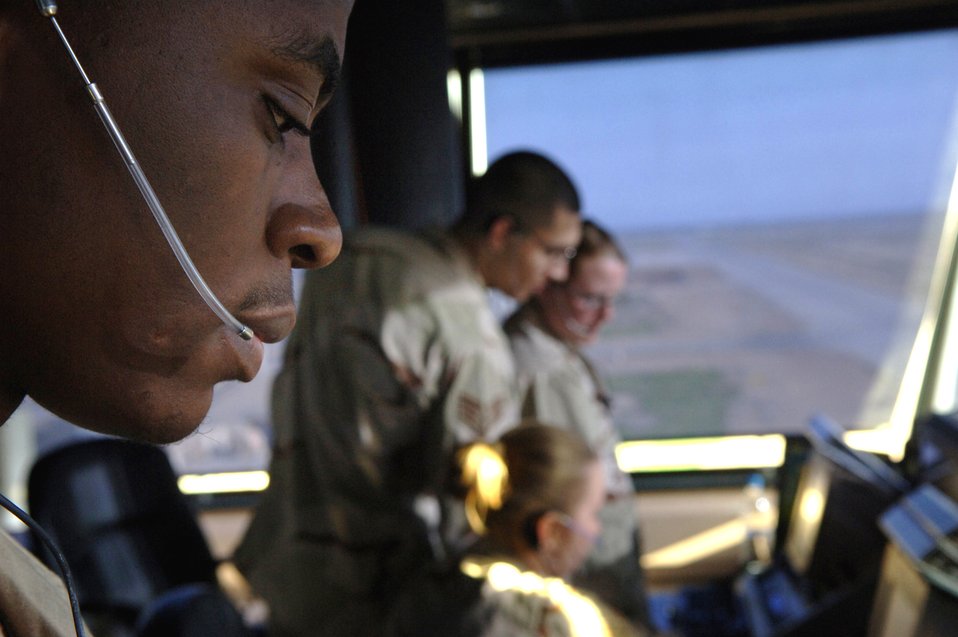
Operation Iraqi Freedom

BALAD AIR BASE, Iraq - Staff Sgt. Jerome Cole, Senior Airmen Sara Mader, Kristen Bundrick, and Staff Sgt. John Topete, 332nd Expeditionary Operational Support Squadron, Air Traffic Controllers comunicate with aircraft to ensure safe landings and takeoffs from the Balad tower Mar. 10, 2007.